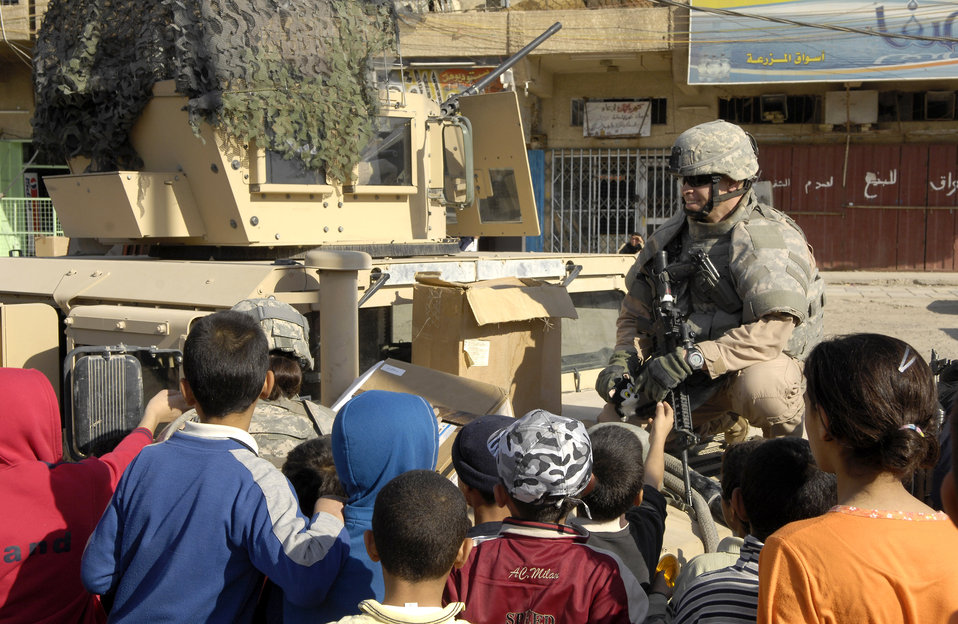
Sharing good will

Tech. Sgt. Dustin Lord hands out toys to local children in Baghdad, Iraq, during a community relations outreach event with Air Force security forces from Det. 3 of the 732nd Expeditionary Security Forces Squadron.